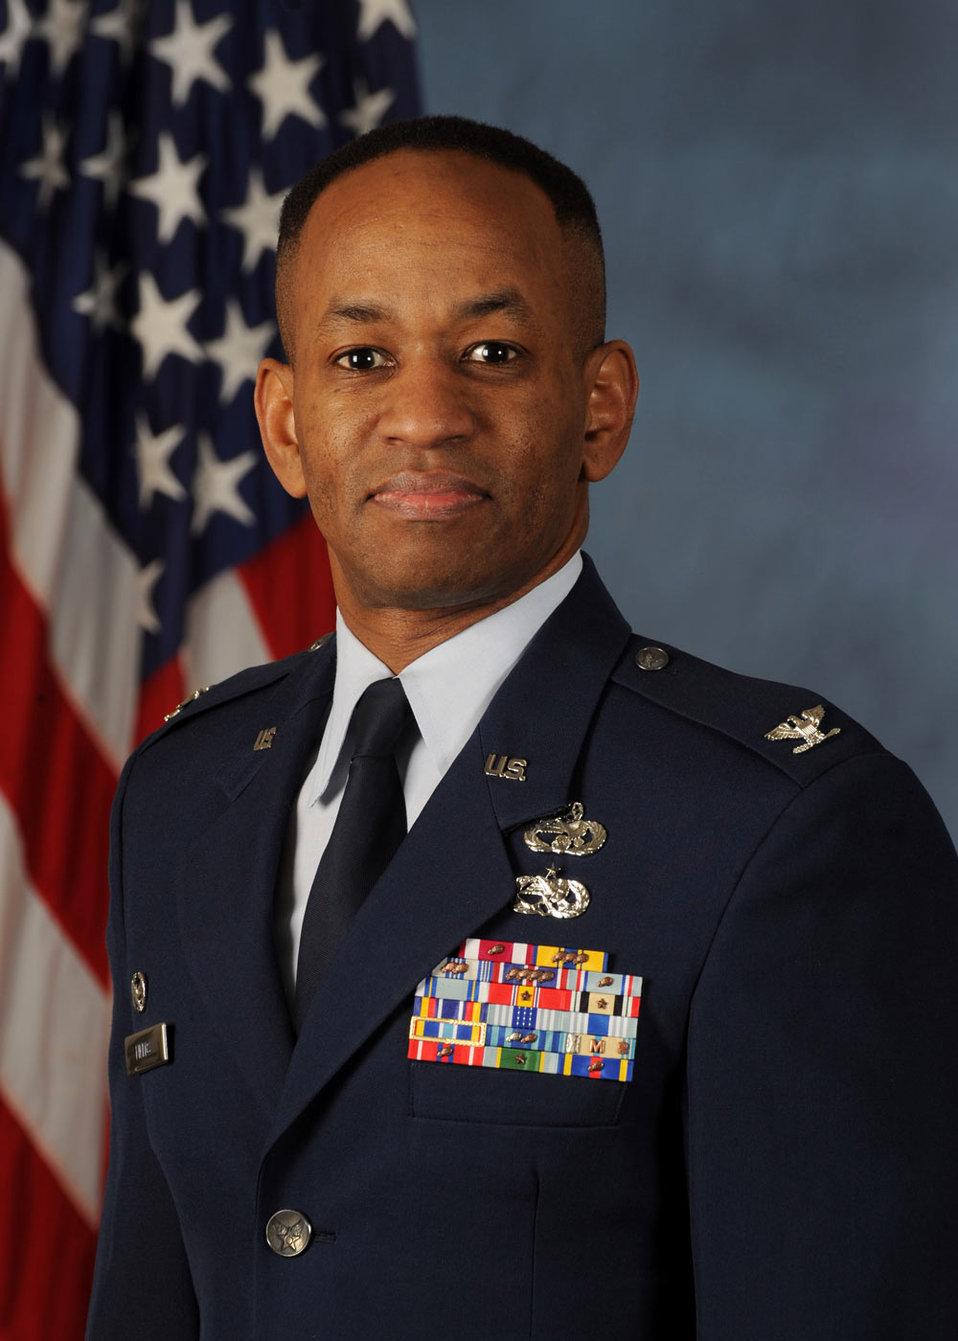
Mike Fields - Pacific and Pacific Southwest Regions

Mike Fields is the Regional Chief Technology Officer for the Pacific and the Pacific Southwest Regions. He served on active duty with the U.S. Air Force and deployed to Iraq. Currently he is in the Oregon Air National Guard.